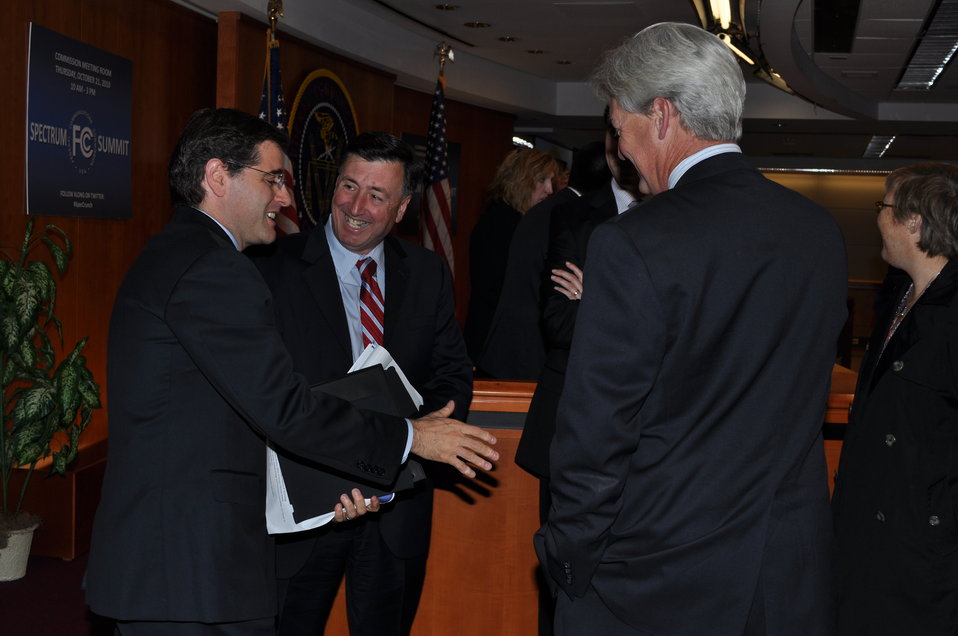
Spectrum Summit